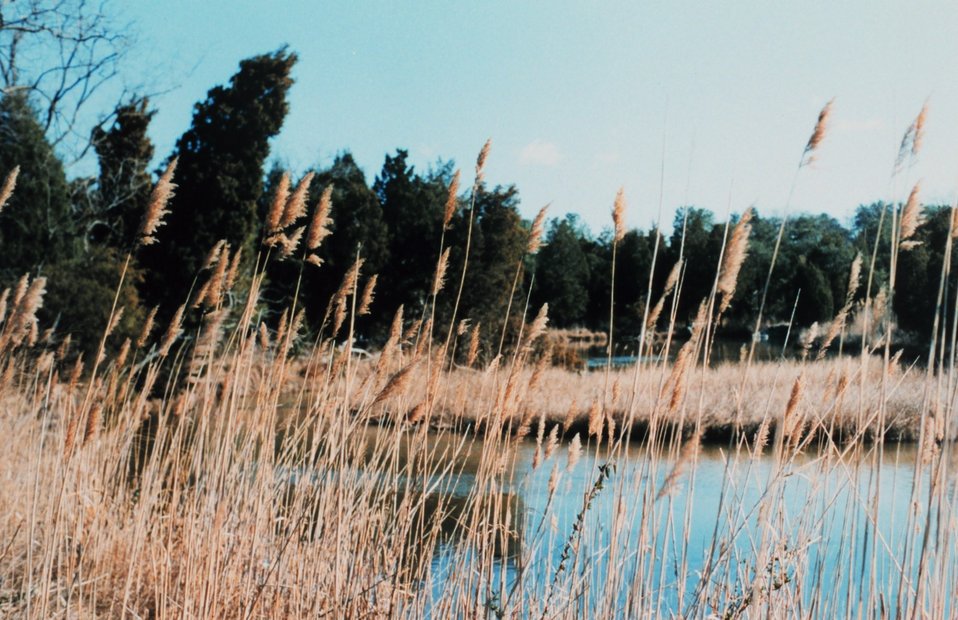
Phragmites australis lining small tidal creek